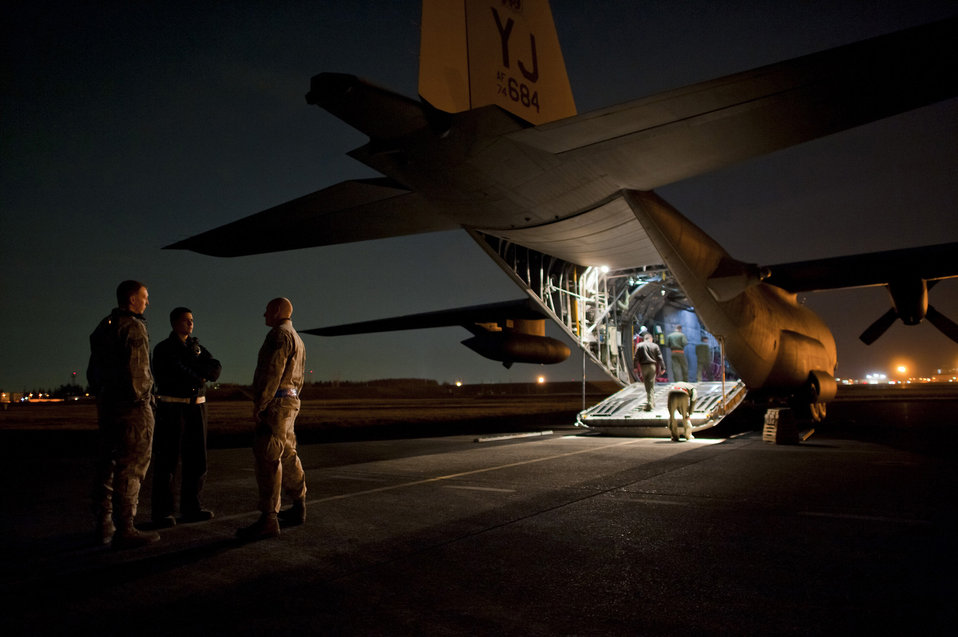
Maintainers keep C-130s flying to supply Operation Tomodachi

Maintainers from the 374th Aircraft Maintenance Squadron talk with loadmasters and flight engineers from the 36th Airlift Squadron while starting up a C-130 Hercules March 14, 2011, at Yokota Air Base, Japan. C-130s play a crucial role in disaster-relief operations because of their ability to land on dirt runways and other less-than-ideal landing conditions.